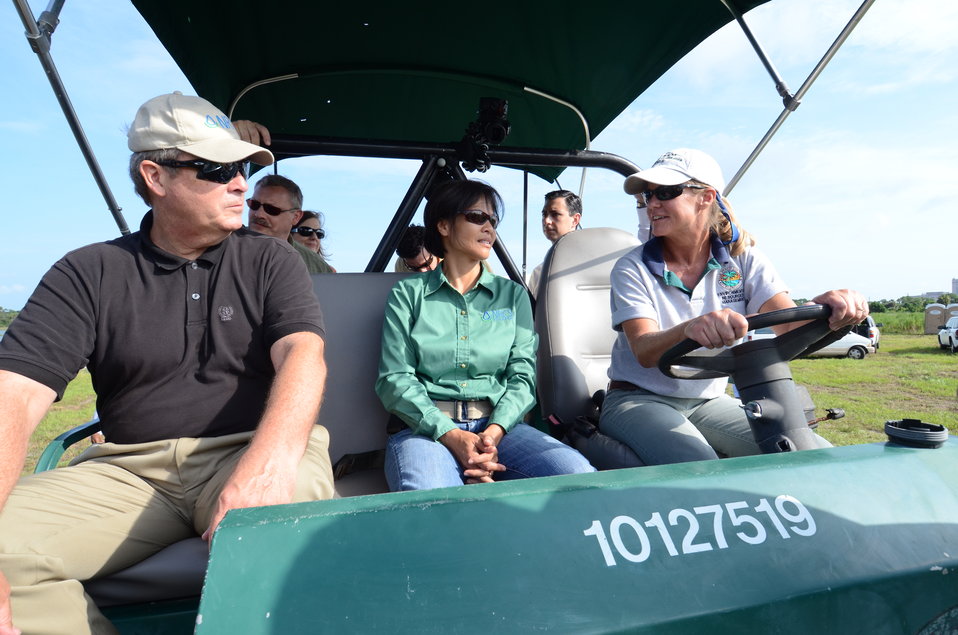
Agriculture Secretary Tom Vilsack rides along with USDA, National Resources Conservation Service Nga Watts and Palm Beach County Board of County Commissioners, Department of Environmental Resource Management, Natural Resources Stewardship Environmental Program Supervisor Brenda Hovde (driving) to see the Winding Waters Natural Area.